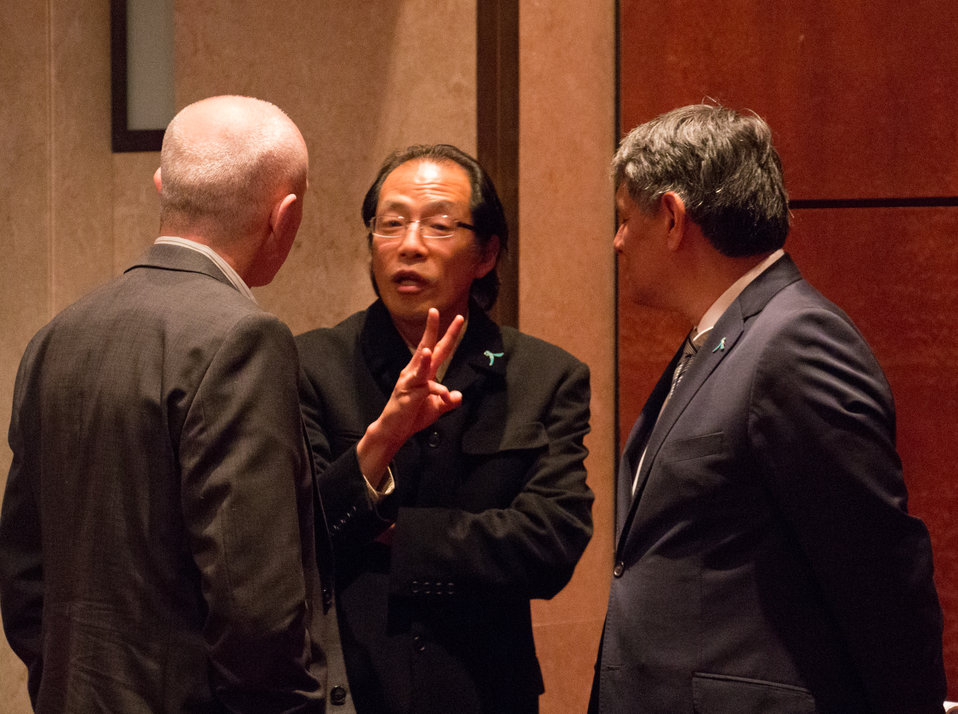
VHAP Launch (496 of 511)